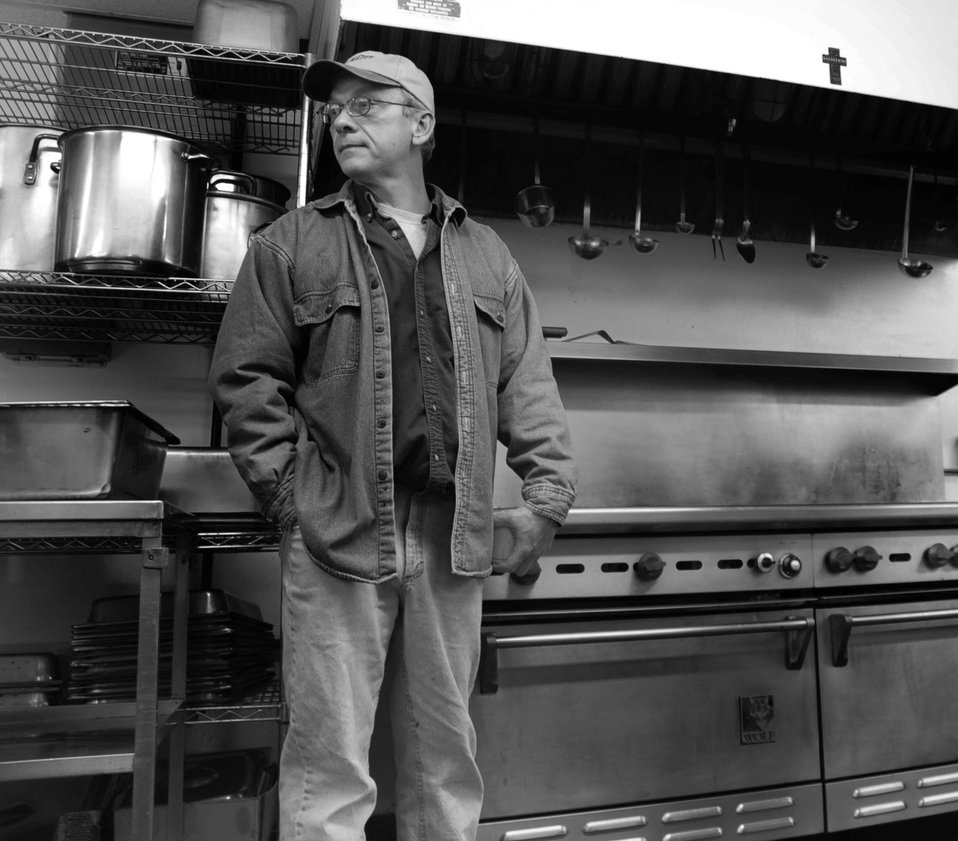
We STILL want you

Steven Comstock, a homeless veteran, lives at the Cornerstone Rescue Mission in Rapid City S.D., while trying to get back on his feet. The mission provides homeless people with a place to sleep, warm meals and a chance to get their lives back in order.